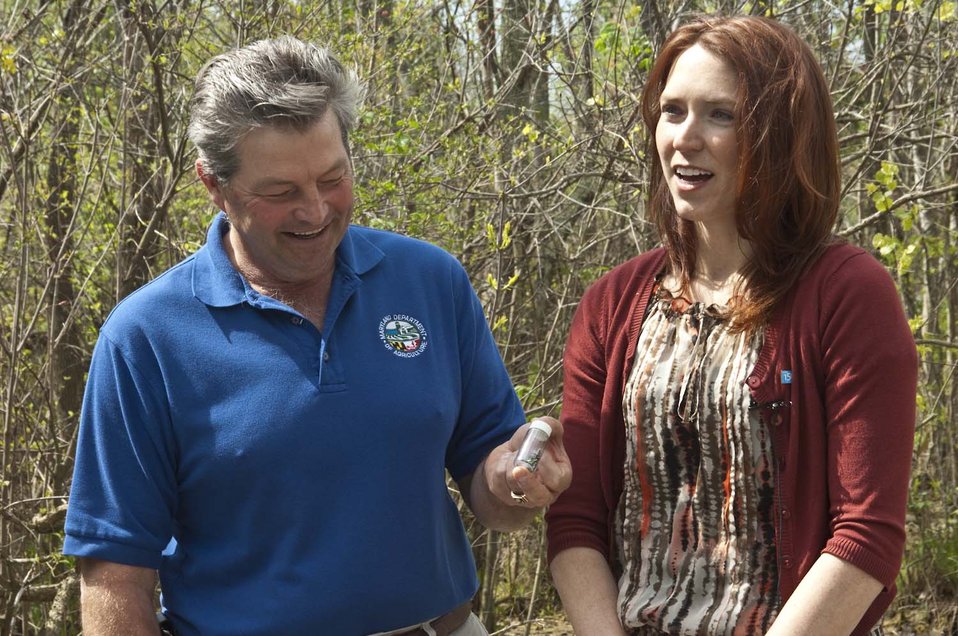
U.S. Department of Agricuture Deputy Under Secretary for Marketing and Regulatory Programs, Rebecca Blue, along with Maryland Agriculture Secretary Buddy Hance, discuss the damage that can be done by emerald ash borer and raise a purple trap for the 2012 EAB survey season.